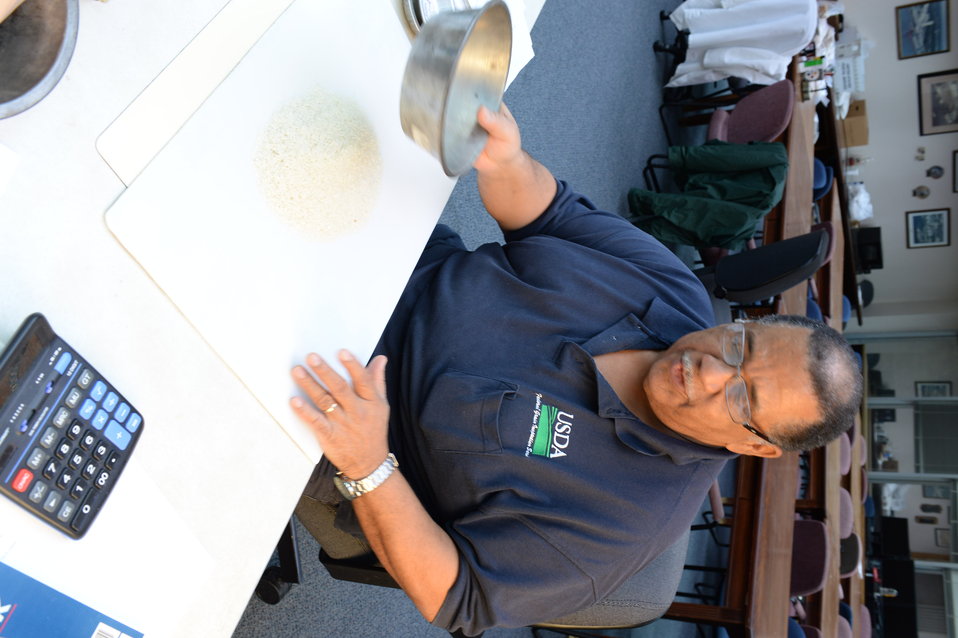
U.S. Department of Agriculture (USDA) Grain Inspection, Packers and Stockyards Administration (GIPSA) Federal Grain Inspection Service (FGIS) employee examines rice samples on white background to check for imperfections at the FGIS inspection laboratory in New Orleans, LA on Monday, Nov. 18, 2013.